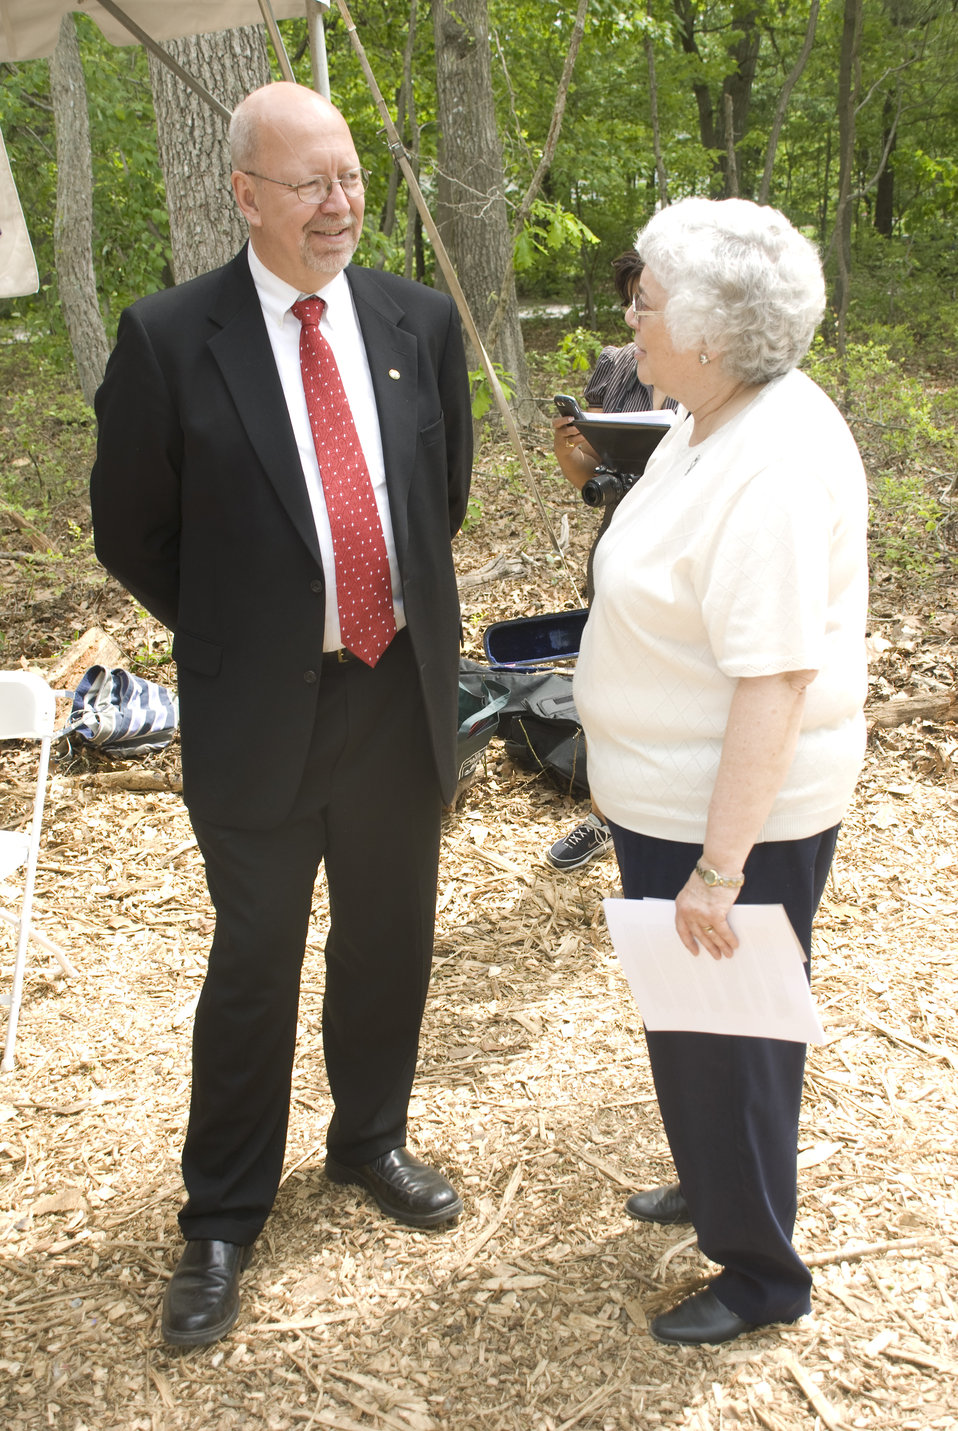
Ken Grannemann and Claire Goad